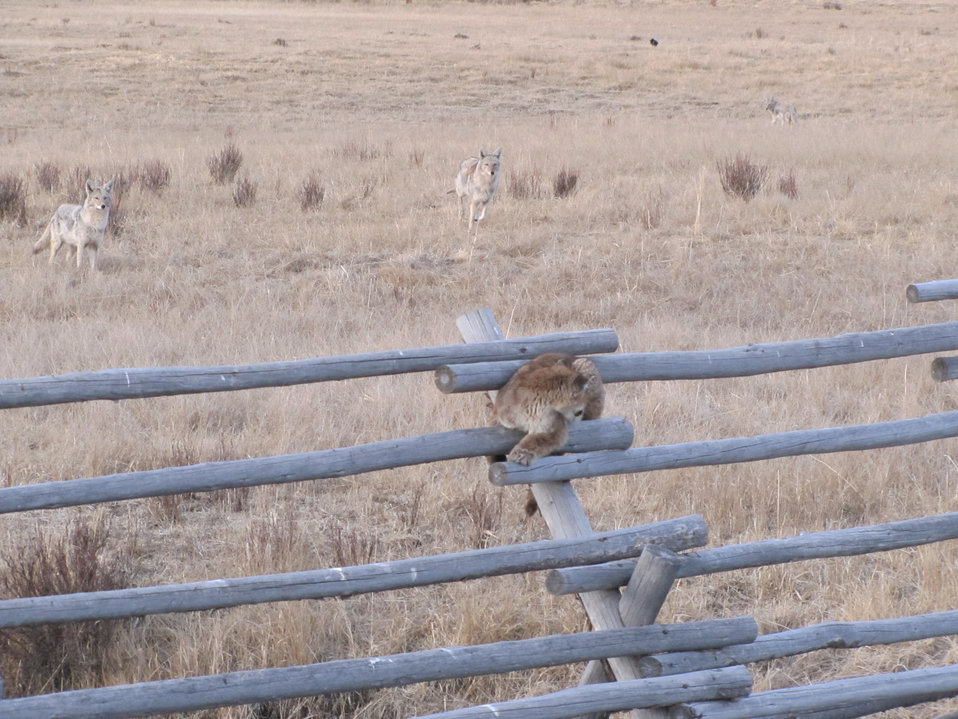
This is Getting Serious ...

One in a series of seven photos:

The National Elk Refuge's Outdoor Recreation Planner witnessed a spectacular standoff between two juvenile mountain lions and five coyotes. The coyotes let the cats know they weren’t welcome in the area. The mountain lions sought safety on a buck and rail fence for over an hour while the coyotes lurked in the background.

Notice that one of the mountain lions has moved from its previous location on the fence. Three coyotes can be seen about to make a move to challenge it while the remaining mountain lion watches.

Credit: Lori Iverson / USFWS

This photo series has gone viral! Join the discussion on our Facebook page: www.facebook.com/photo.php?fbid=595246397154972&set=a...